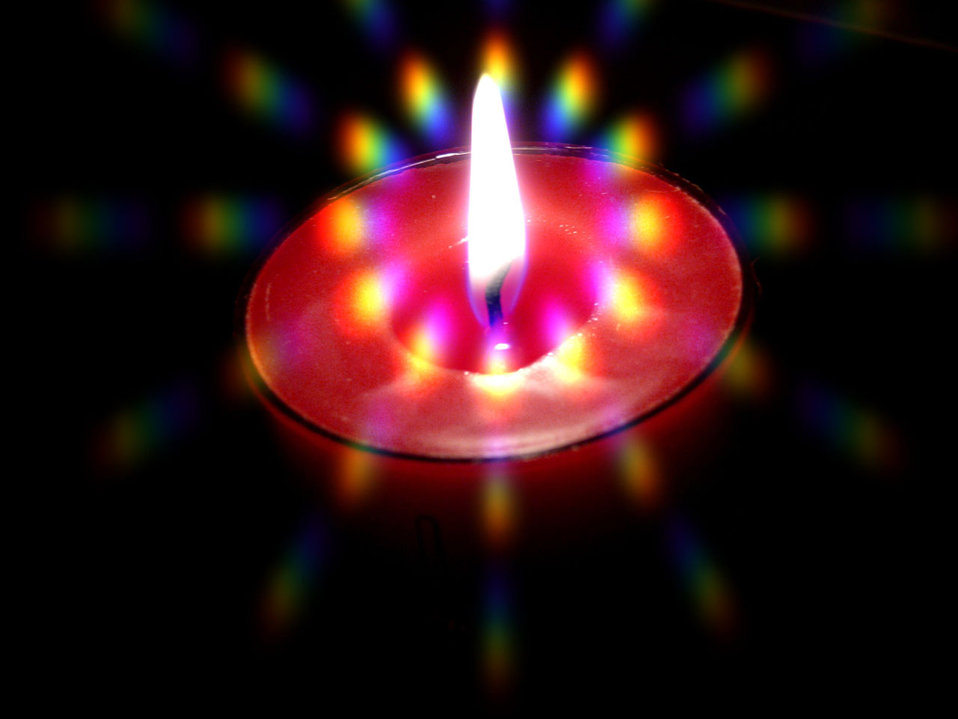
Candle with special lights.